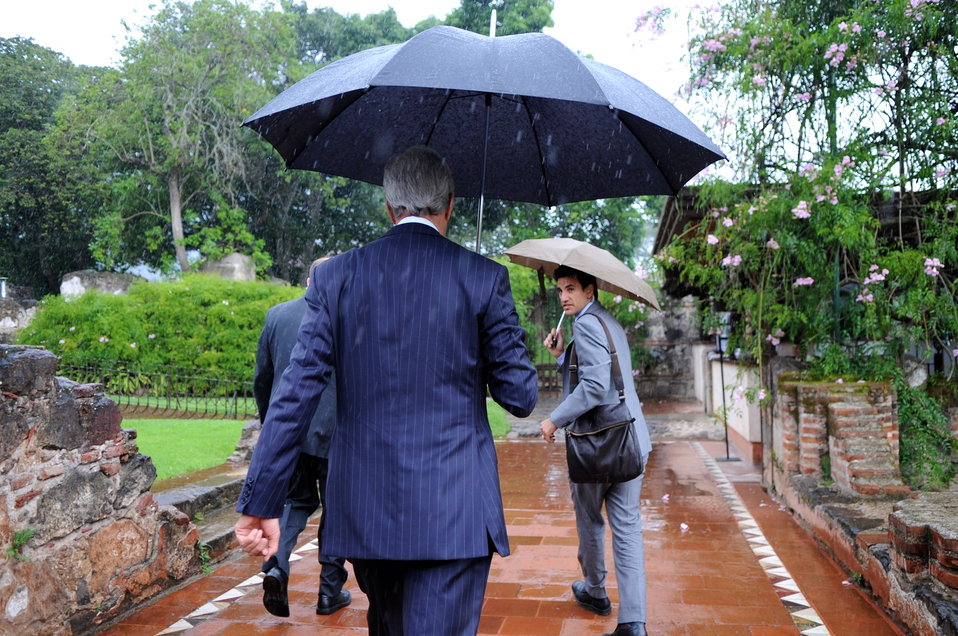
Secretary Kerry Dodges Rain Between OAS Meetings

U.S. Secretary of State John Kerry dodges the rain between Organization of American States meetings in Antigua, Guatemala, on June 4, 2013.